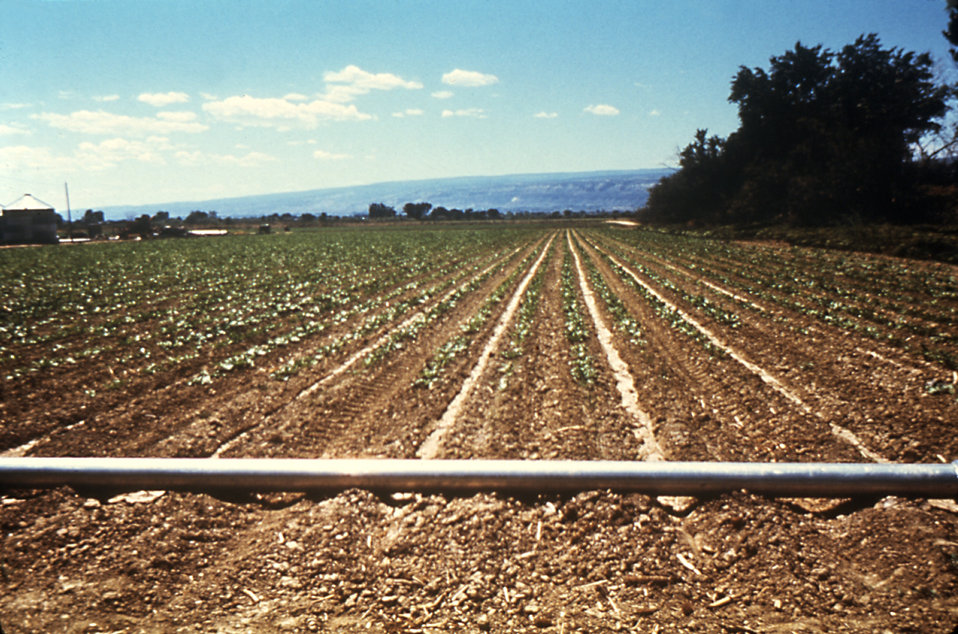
This irrigation pipeline running across a furrowed Colorado field minimizes the chance for the accumulation of standing water.